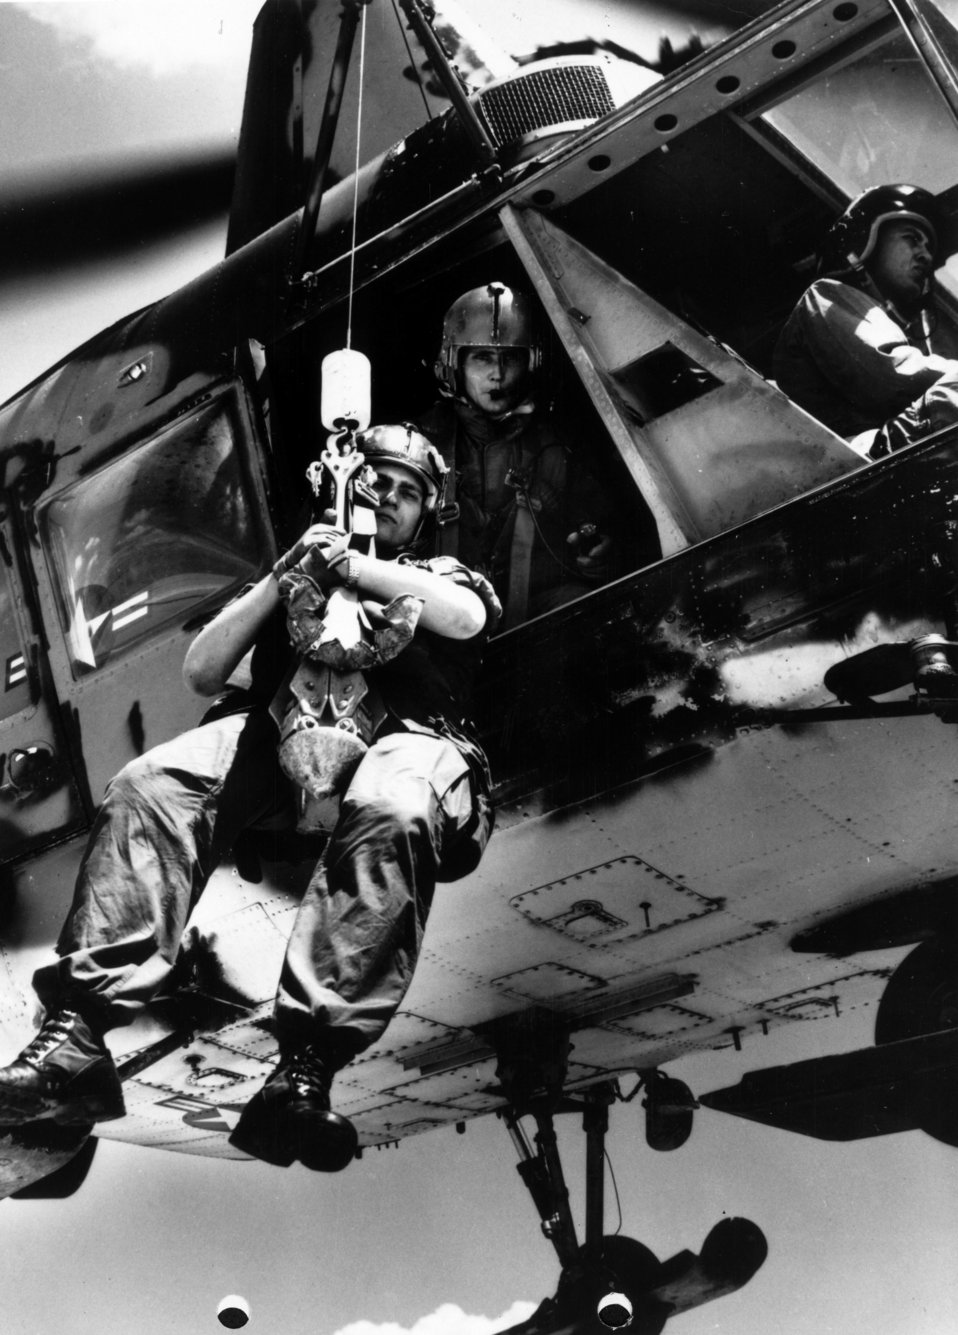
Airman First Class Paul J. Volges, 24, of New York City, rides the jungle penetrator hoist on another mission of mercy. Volges, an aeromedical technician with Detachment 11, 38th Aerospace Rescue and Recovery Squadron at Tuy Hoa air base, has voluntarily risked his life on three occasions to search hostile territory for crash survivors. On two occasions he was ordered to leave the scene due to approaching enemy forces. During another mission he braved enemy ground fire to run 250 yards down a beach to recover the pilots body from crashed helicopter. Assisting Volges is Staff Sergeant William O. Johnson, 29, (center), of Mobile, Alabama, flight engineer on the HH-43B helicopter. Major John J. Elliff, 33, (right), of Banquete, Texas, is the pilot and commander of Detachment 11.